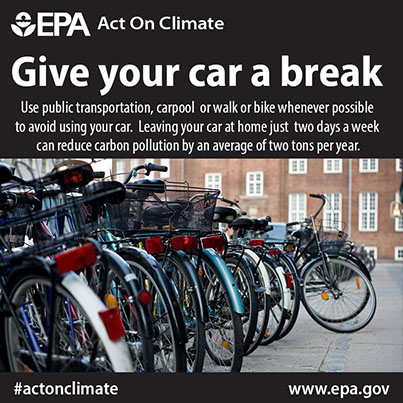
Give your car a break

Walk the walk. Give your car a break and consider using sustainable alternatives to help save energy and #ActOnClimate www.epa.gov/earthday/actonclimate/